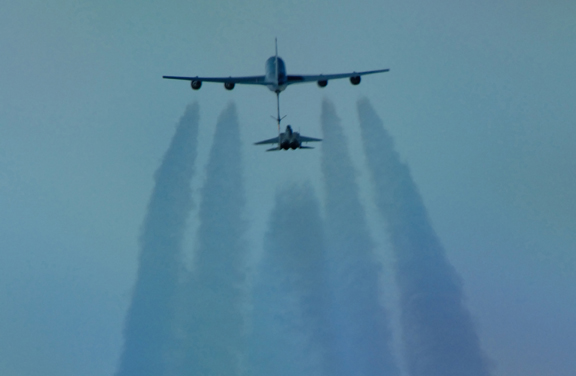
Airpower summary for June 22, 2007

An F-15E Strike Eagle is refueled by a KC-135 Stratotanker during opertions over Southwest Asia.